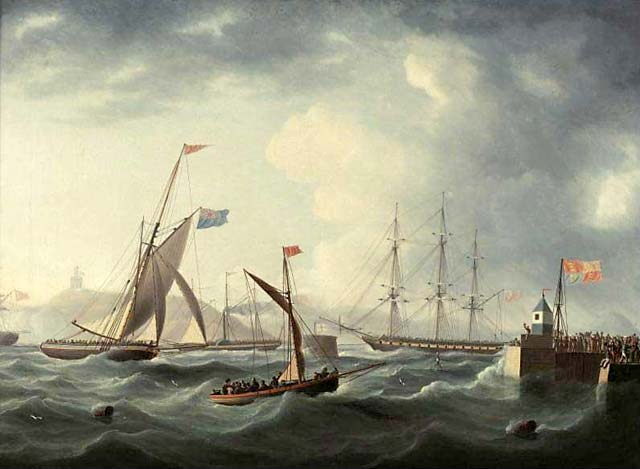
0 around edinburgh - firth of forth - royal george buttersworth